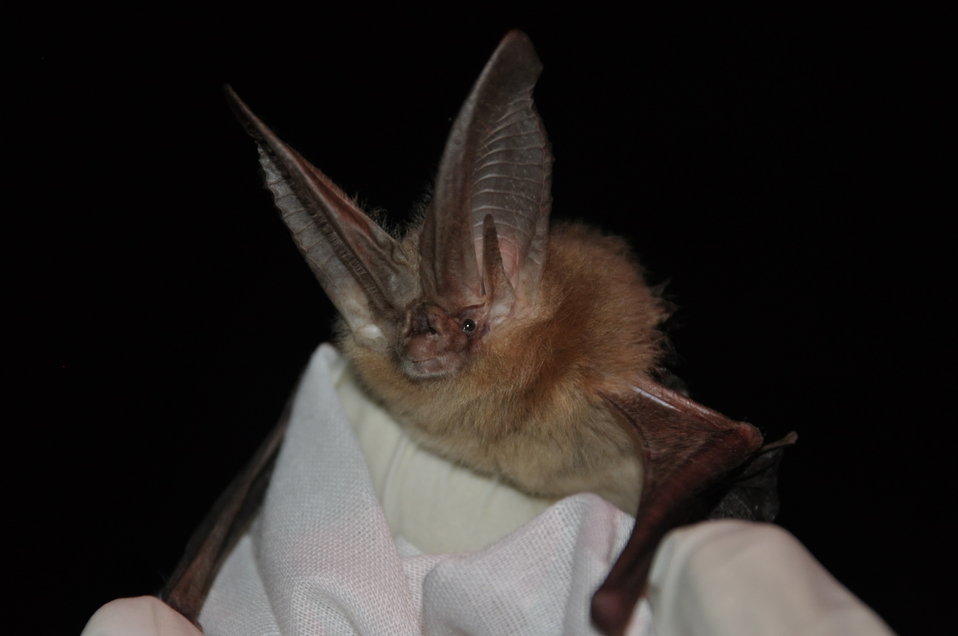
Townsend's big-eared bat (Corynorhinus townsendii)